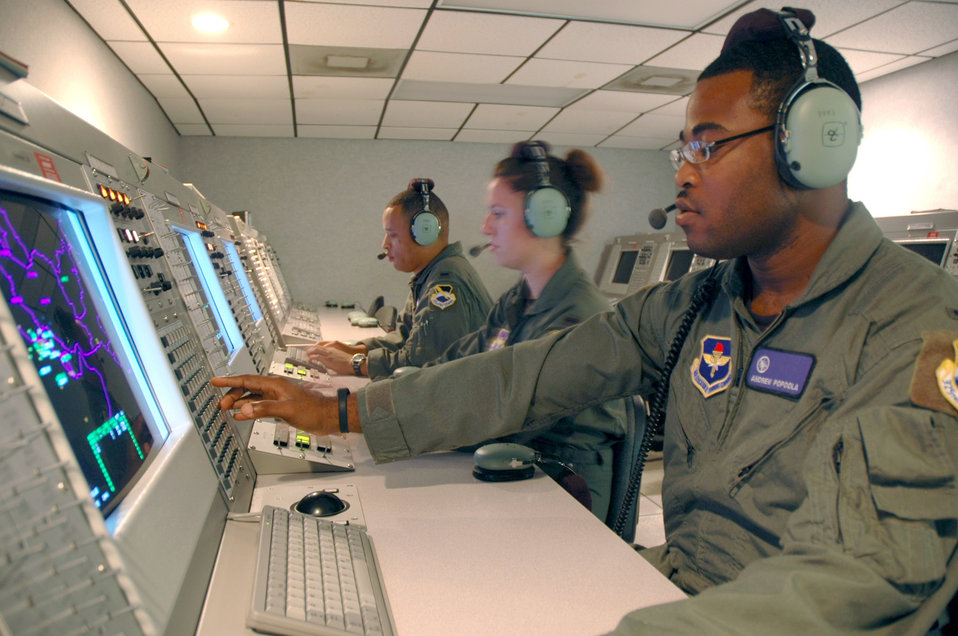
Tyndall spearheads F-22 fighter tactics integration

First Lts. Andrew Popoola, Renee Powell and Darin Romain practice sending free text messages at Tyndall Air Force Base, Fla., to F-22 Raptor pilots on July 27. The 325th Air Control Squadron trains all active duty, Guard and Reserve undergraduate air battle managers. The lieutenants are all air battle manager students.